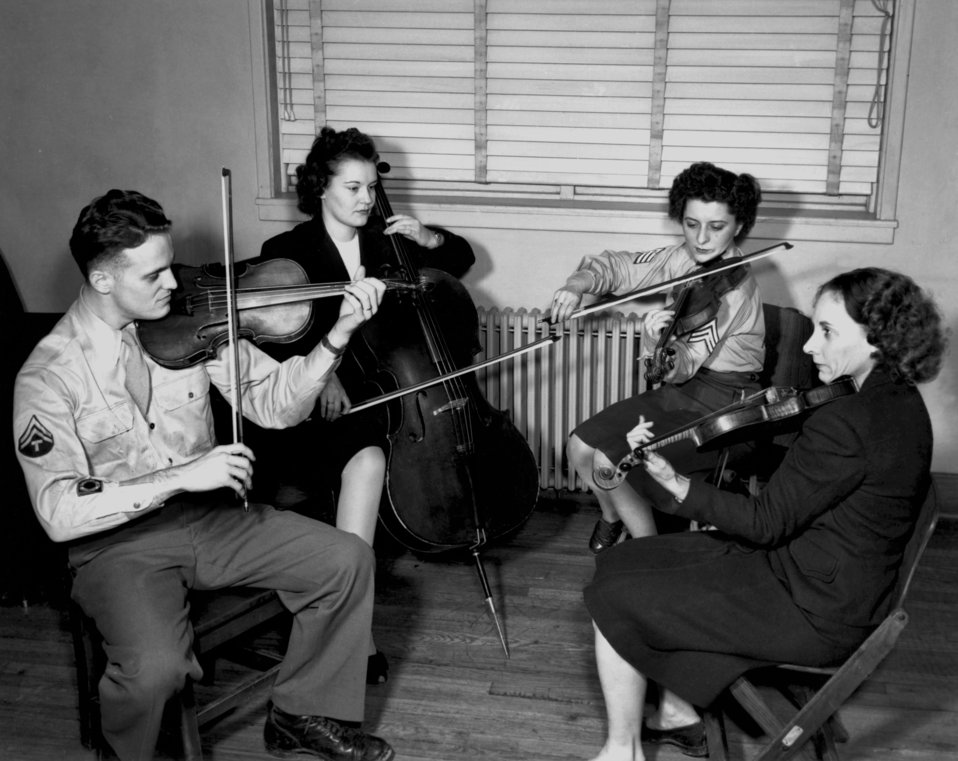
Chamber Music 1945 Oak Ridge

1473 DOE photo Ed Westcott 1945 L to R Roy Blanco, Betty Beason, Rita Eringer, Alice Lyman Oak Ridge Tennessee